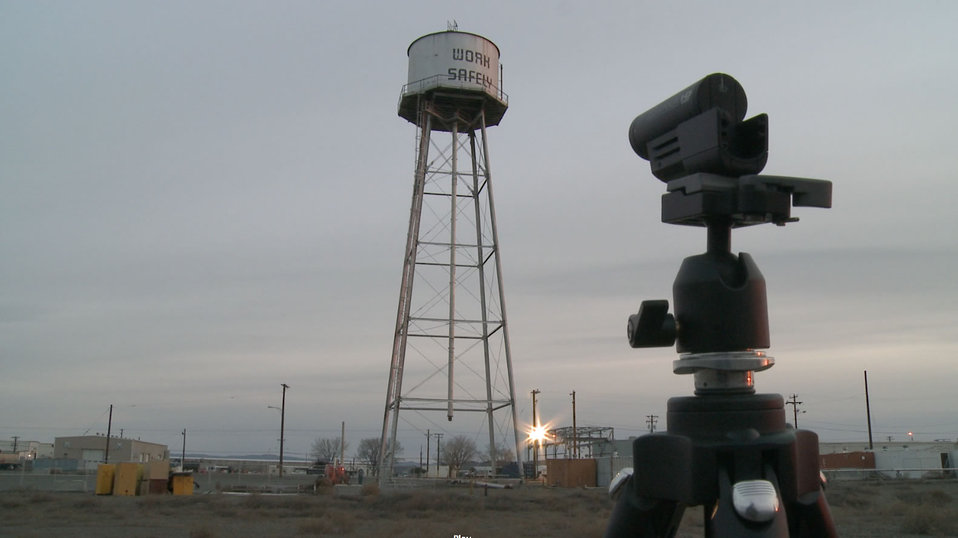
Hanford Site Demolitions

A camera is positioned to capture the demolition of the water tower marked by a 'Work Safely' motto that greeted workers.